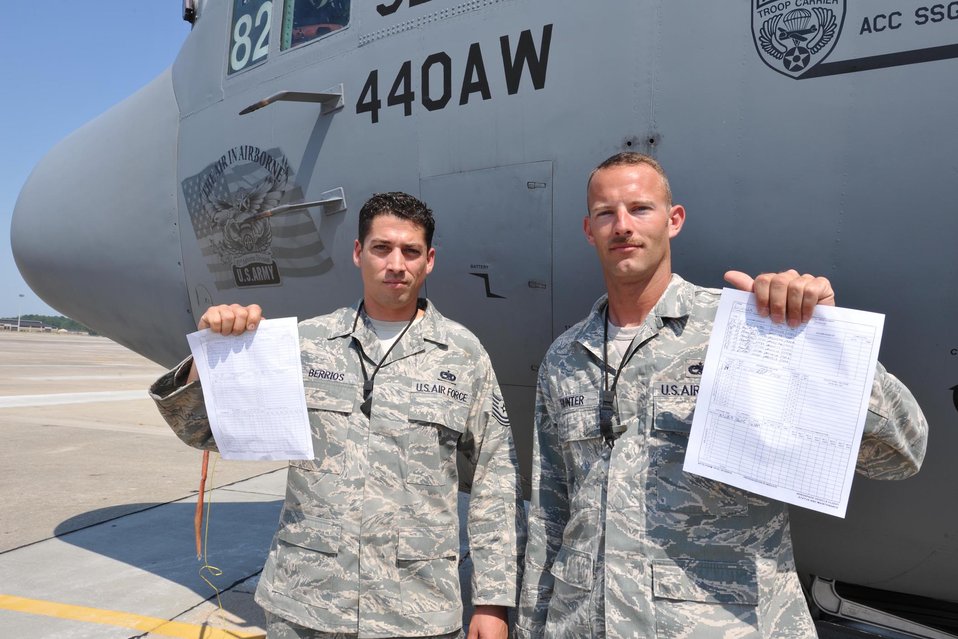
Pope C-130 crew chiefs achieve zero-defect checklist

Tech. Sergeants Abner Berrios (left) and Alan Hunter display their letter perfect